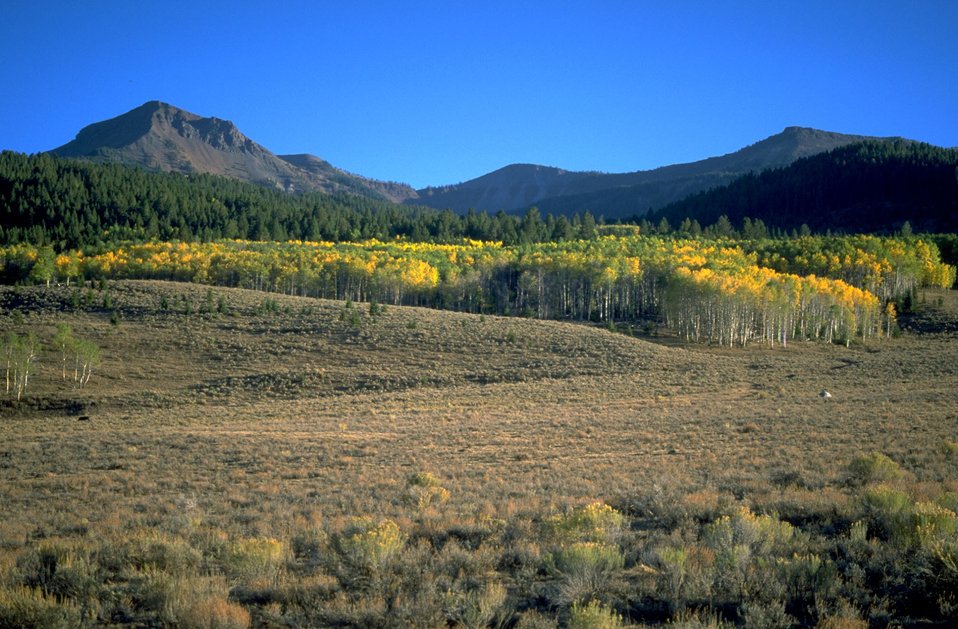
Aspen trees beginning to turn colors with the Centennial Mountains in the background